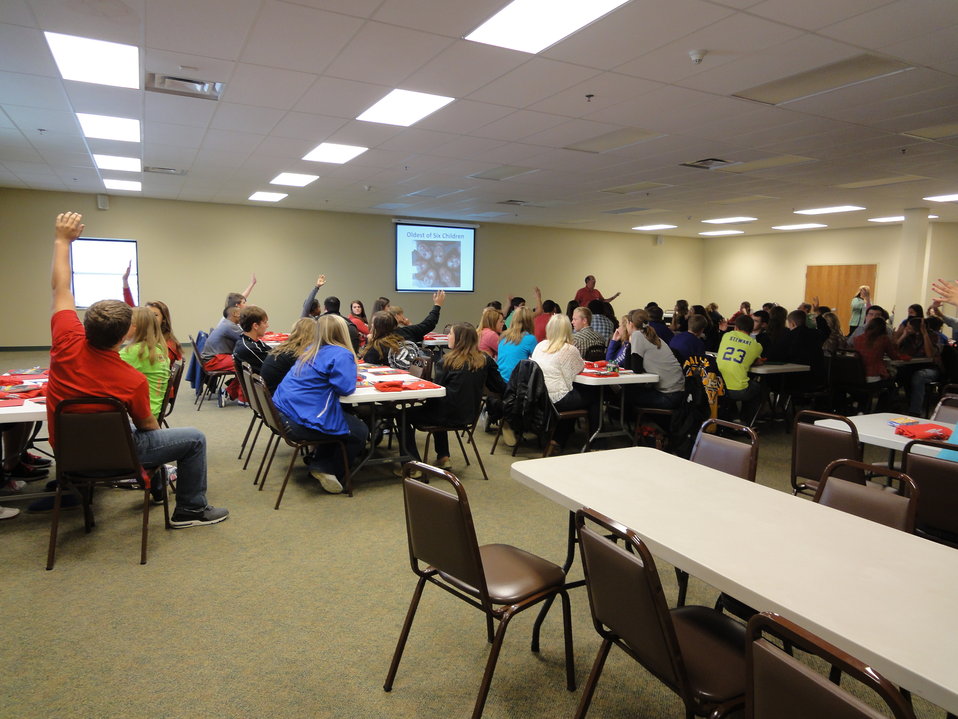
Drug Facts Week Event held in Portsmouth, Ohio

Eighty-five students from Scioto County High Schools attend the first annual 'Teen Ambassador Drug Prevention Workshop.' High School Students spent four hours in this Workshop that was conducted by the Ohio State University Pharmacy School 'Generation Rx Initiative' and the 'Arms of an Angel Foundation.'